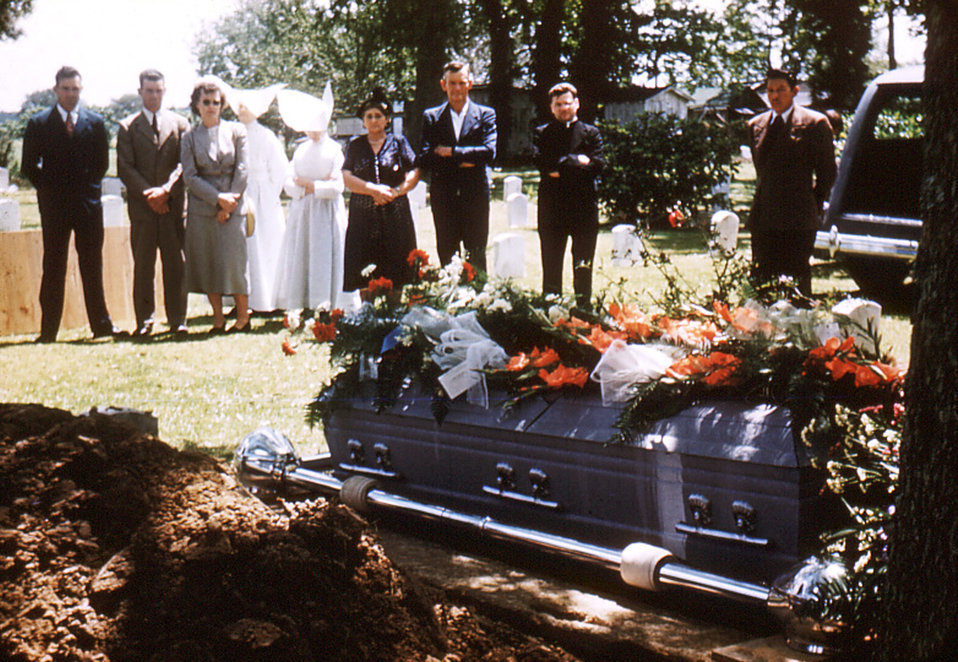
Shot in the hospital's cemetery, on the grounds of the Carville Louisiana Leprosarium, this historic image depicted a funeral that was being held on behalf of a departed patient. The hospital was a self-contained compound with its own storehouse, laundry, patient treatment centers, which included a dental office, food-processing facilities, i.e., a cafeteria, and as pictured here, its own cemetery.